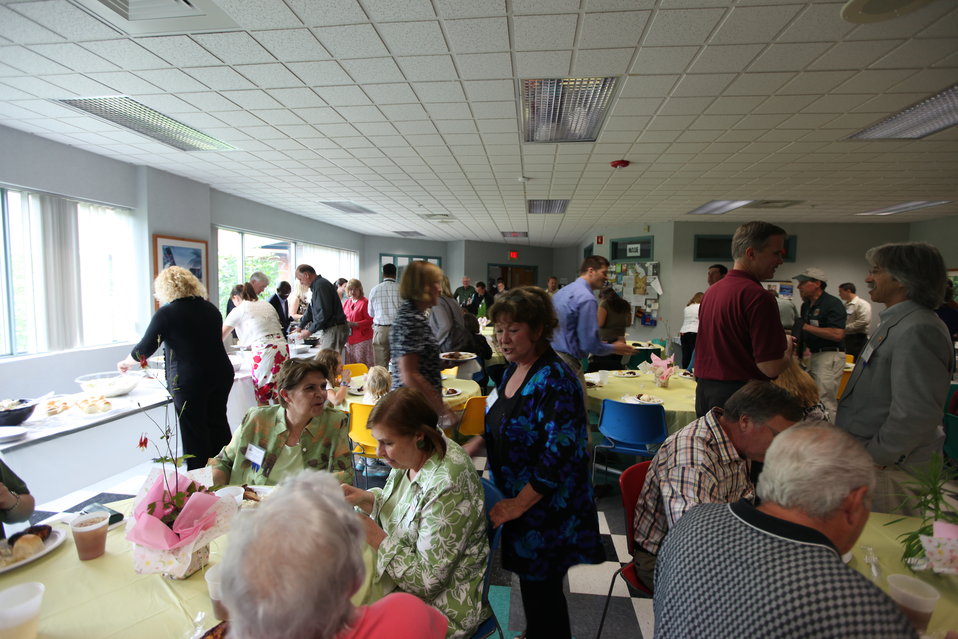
Northeast Region Employee Appreciation Awards

luncheon